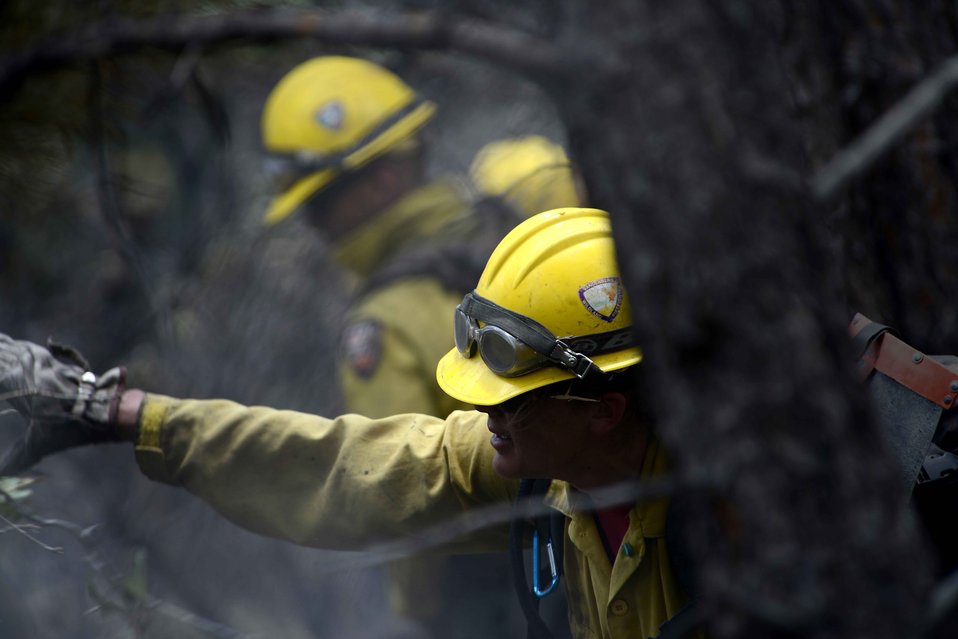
Clear the line

Marissa Halbeisen helps cut and clear a fire line in the Mount Saint Francois area of Colorado Springs, Colo., June 28, 2012. Currently, more than 90 firefighters from the U.S. Air Force Academy, along with assets from Air Force Space Command; F.E. Warren Air Force Base, Wyo.; Fort Carson, Colo.; and the local community continue to fight the Waldo Canyon fire. Halbeisen is a firefighter with the Vandenberg Air Force Base, Calif., Hot Shots.